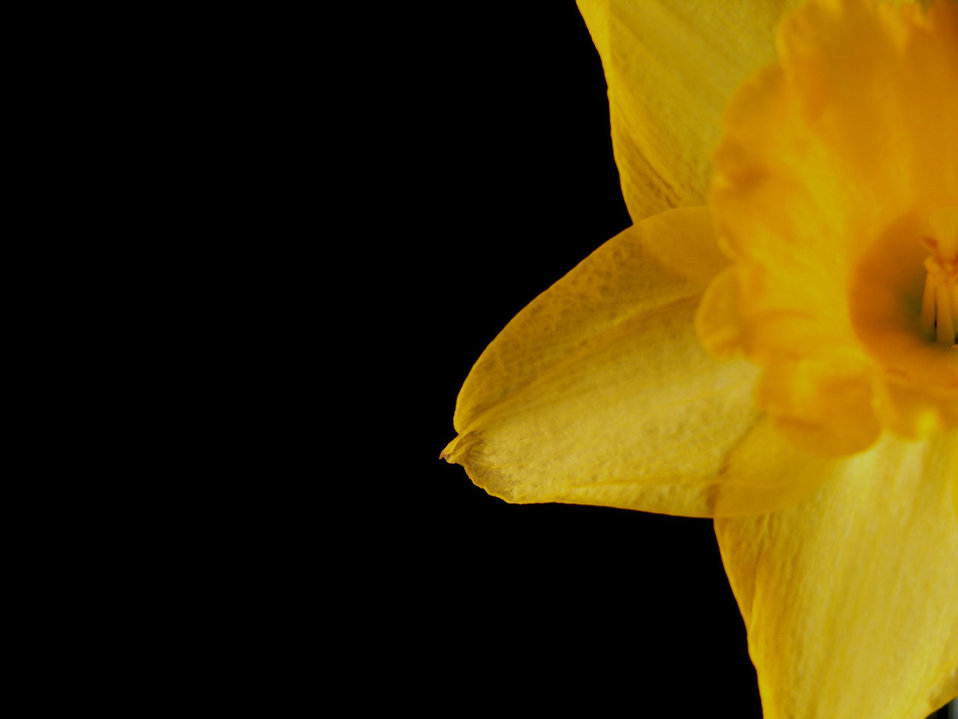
Yellow daffodil

Daffodil on black background.